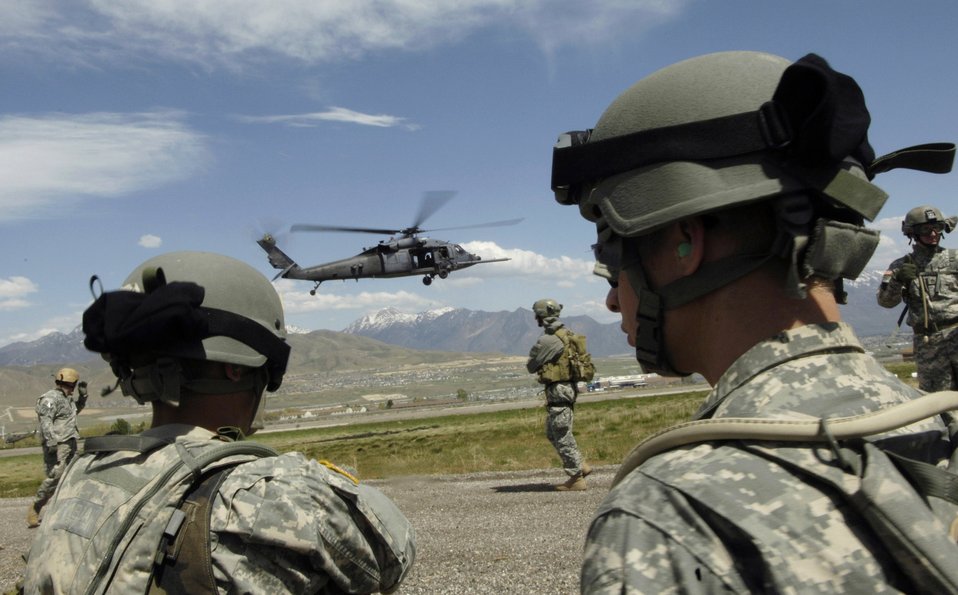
Search and rescue training

Soldiers from the Utah National Guard move into position for HH-60 Pave Hawk hoist training May 3 during a combat search and rescue integration exercise in Sandy, Utah. Members of the 34th Weapons Squadron from Nellis Air Force Base, Nev., led the search and recovery training. The objective of the exercise was to expand expertise and integration with Utah's 211th Aviation Group AH-64 Apache Joint Rotary Wing, 4th Fighter Squadron F-16 Fighting Falcon Striker assets, special operations forces and conduct extensive joint CSAR operations against surface to air threats.